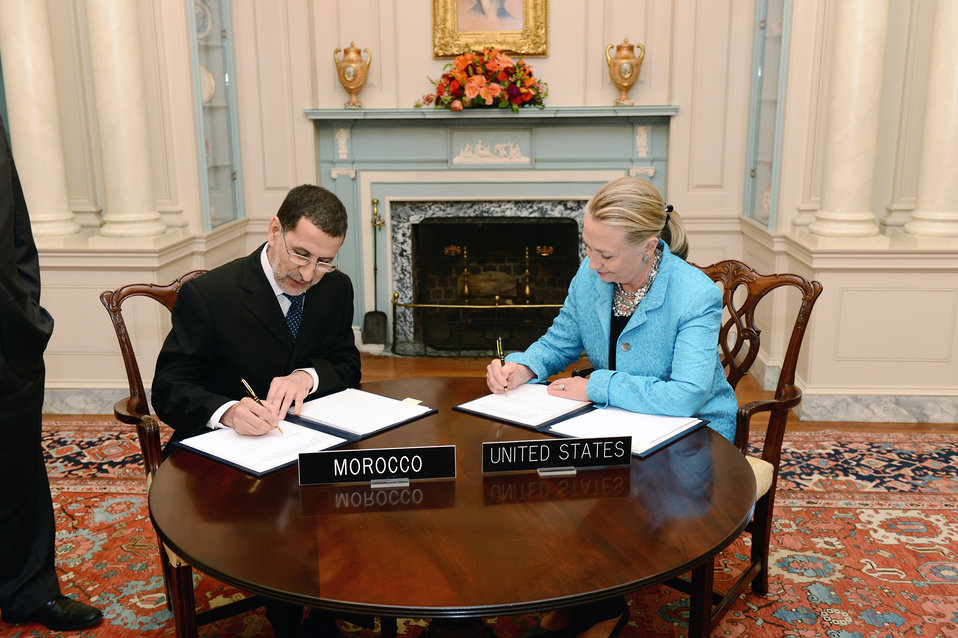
Secretary Clinton Meets With Moroccan Foreign Minister Al-Othmani

U.S. Secretary of State Hillary Rodham Clinton meets with Moroccan Foreign Minister Saad-Eddine Al-Othmani at the U.S.-Morocco Strategic Dialogue at the U.S. Department of State in Washington, D.C. on September 13, 2012.